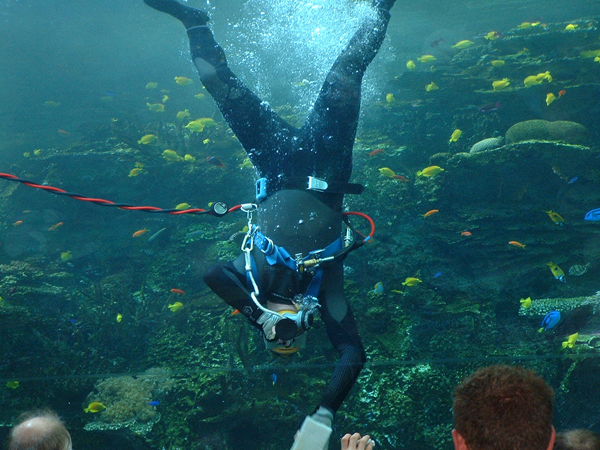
Photo by Angela Grider. A diver cleaning acrylic at the Georgia Aquarium.